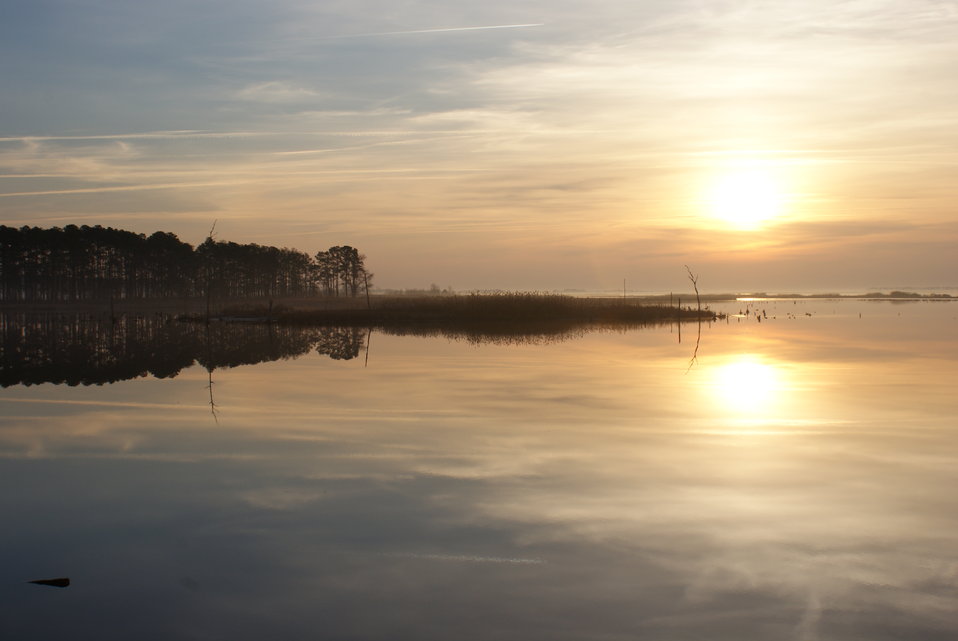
Blackwater River

Sunset over Blackwater River photographed from the wildlife drive at Blackwater National Wildlife Refuge.